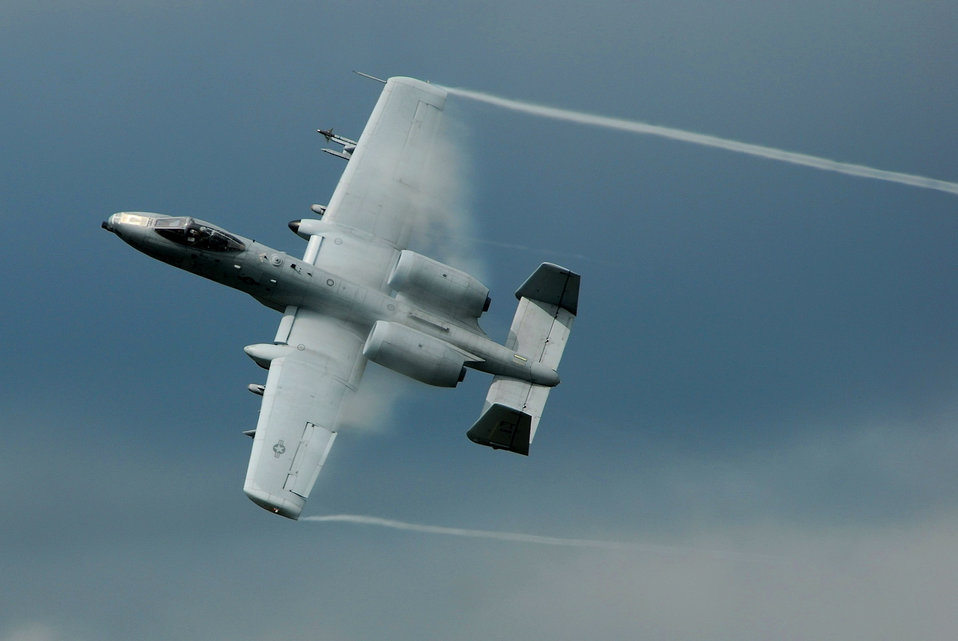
Combat search and rescue training

An A-10 Thunderbolt II ground attack aircraft pulls up sharply out of a low-level strafing run during a combat search and rescue demonstration at Moody Air Force Base, Ga., Oct. 4. The digitally upgraded A-10 is equipped with satellite-guided precision weaponry and advanced communications data links for transferring information with ground-based warfighters.